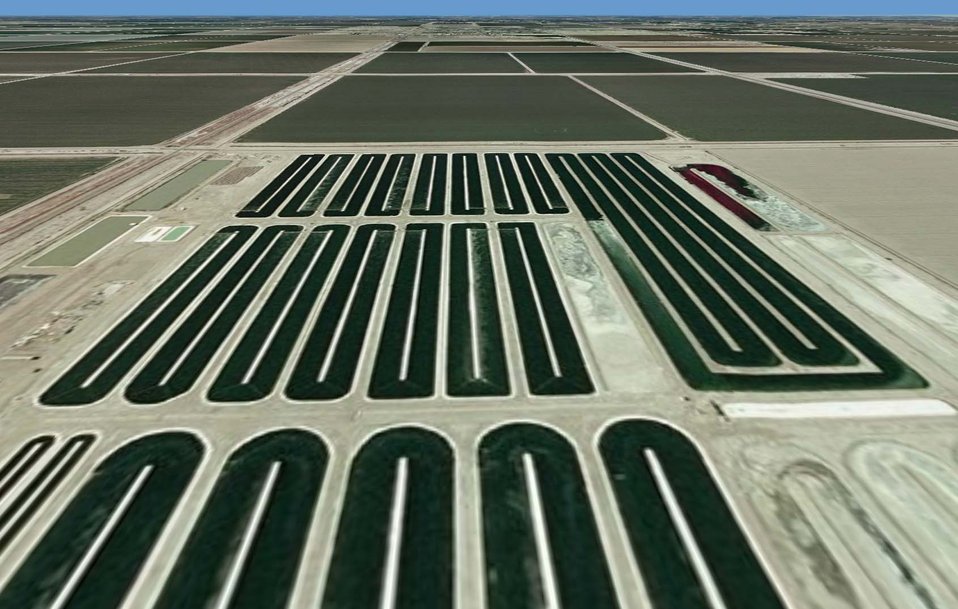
Shown are the outdoor raceway ponds in southern California.
A new Pacific Northwest National Laboratory study shows that 17% of the United States' imported oil for transportation could be replaced by biofuels made from algae grown in outdoor raceway ponds location in the Gulf Coast, Southern Seaboard, and the Great Lakes.